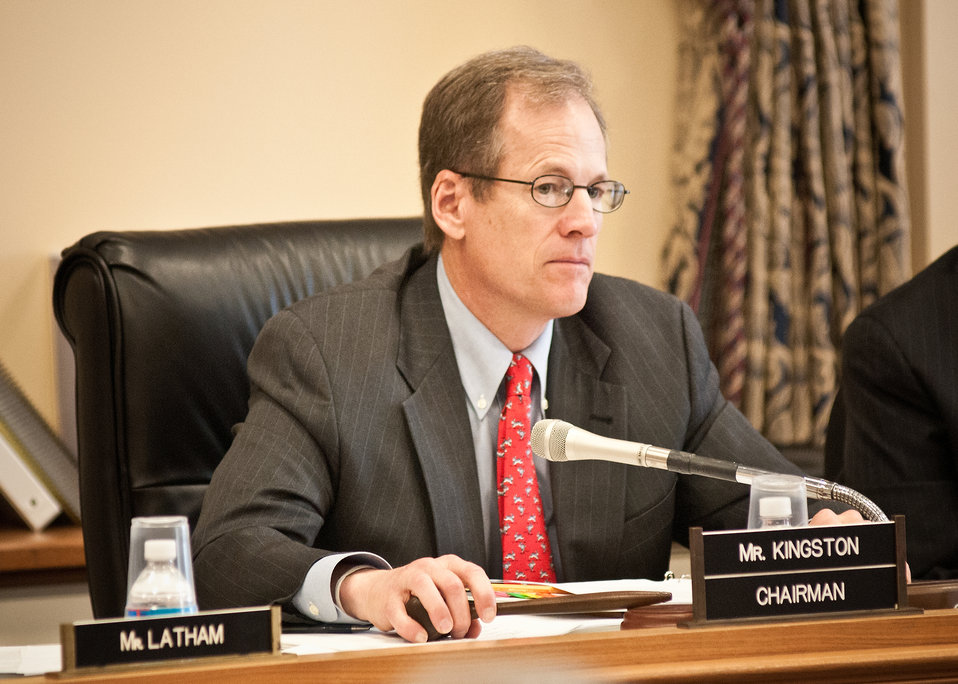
Congressman Jack Kingston, Georgia, Chairman of the of the House Agriculture Appropriations Committee poses questions to Ed Avalos, Under Secretary, Marketing and Regulatory Programs along with representatives of the Marketing and Regulatory Program agencies testifying on Capitol Hill before the House Agriculture Appropriations Subcommittee on the agencies fiscal year 2013 budget requests in Washington, D.C., Tuesday, March 6, 2012.